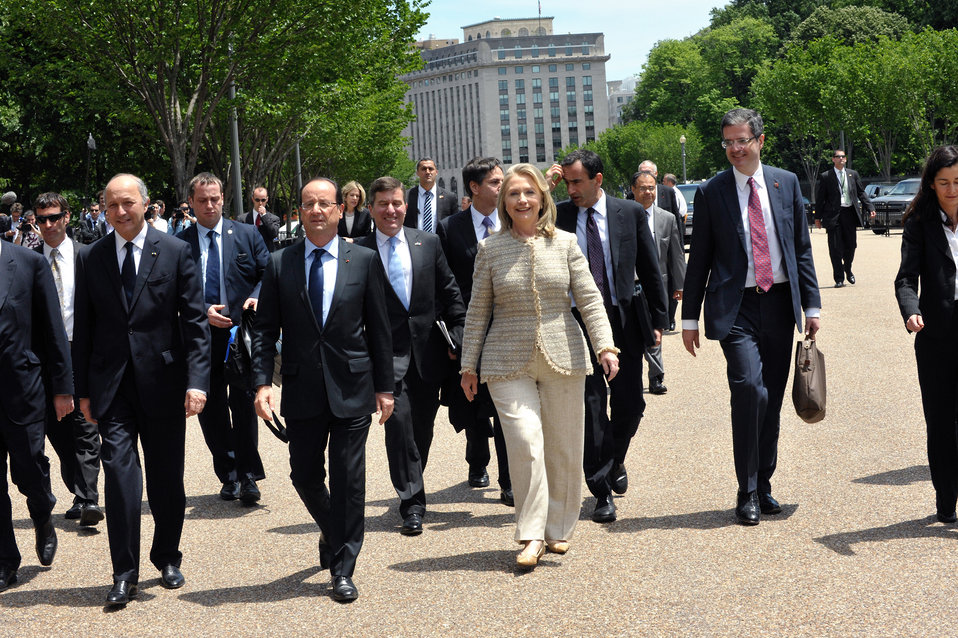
Secretary Clinton Hosts a Working Lunch for French President Hollande

U.S. Secretary of State Hillary Rodham Clinton hosts a working lunch for French President Francois Hollande at the Blair House in Washington, D.C. on May 18, 2012.